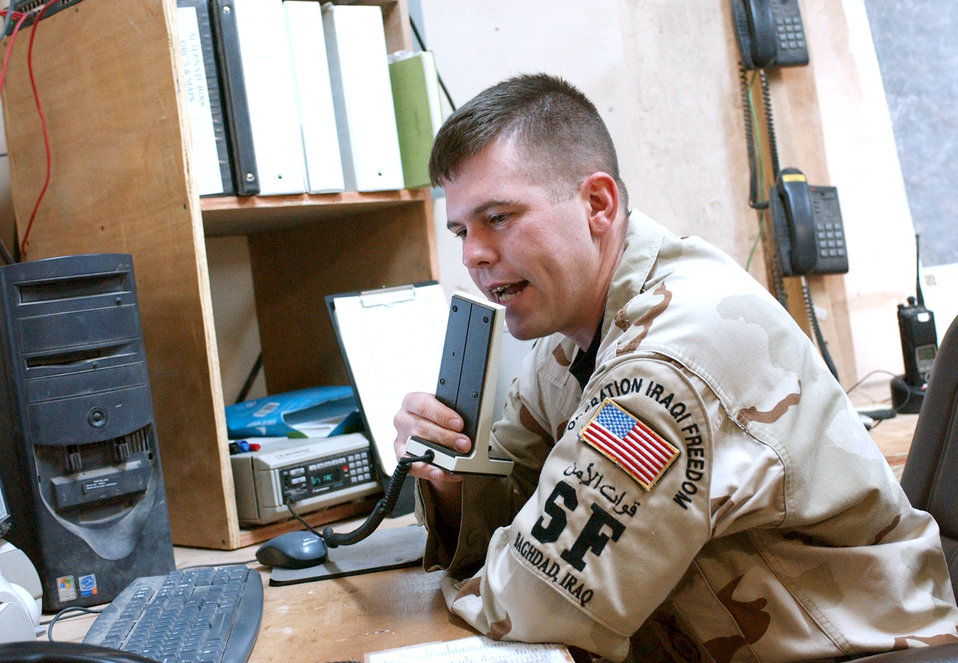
Deployed Airmen earn combat patch for bravery, selfless determination

BAGHDAD, Iraq -- Staff Sgt. Alan Clontz works from the Battle Defense Operations Center as command and control during prisoner movement. Sergeant Clontz serves as the critical communication link between Soldiers and Airmen. He is assigned to the 447th Expeditionary Security Forces Squadron and is deployed from Cannon Air Force Base, N.M.